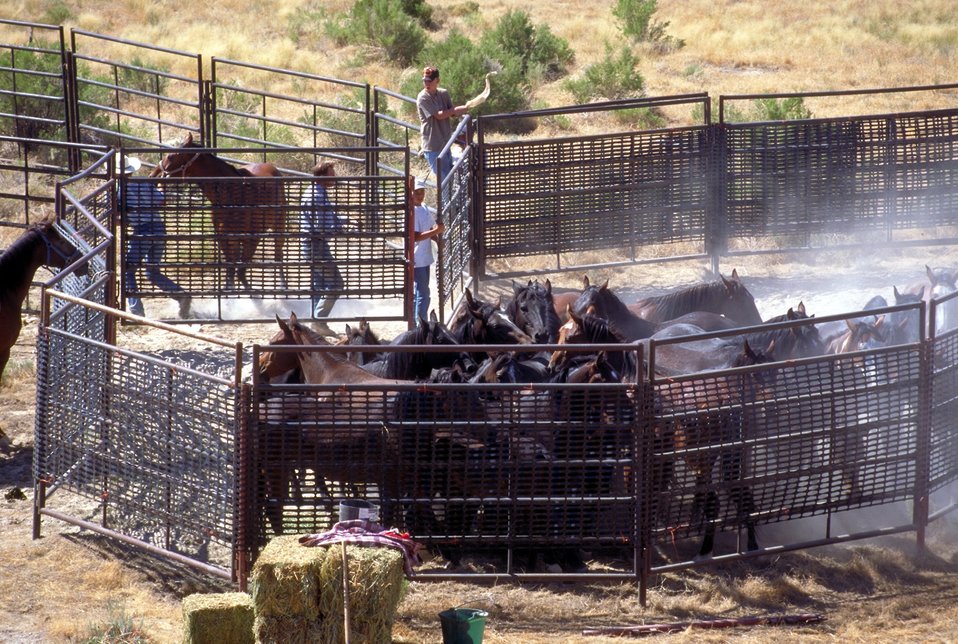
Wild Horse gather, Cedar Mountains.